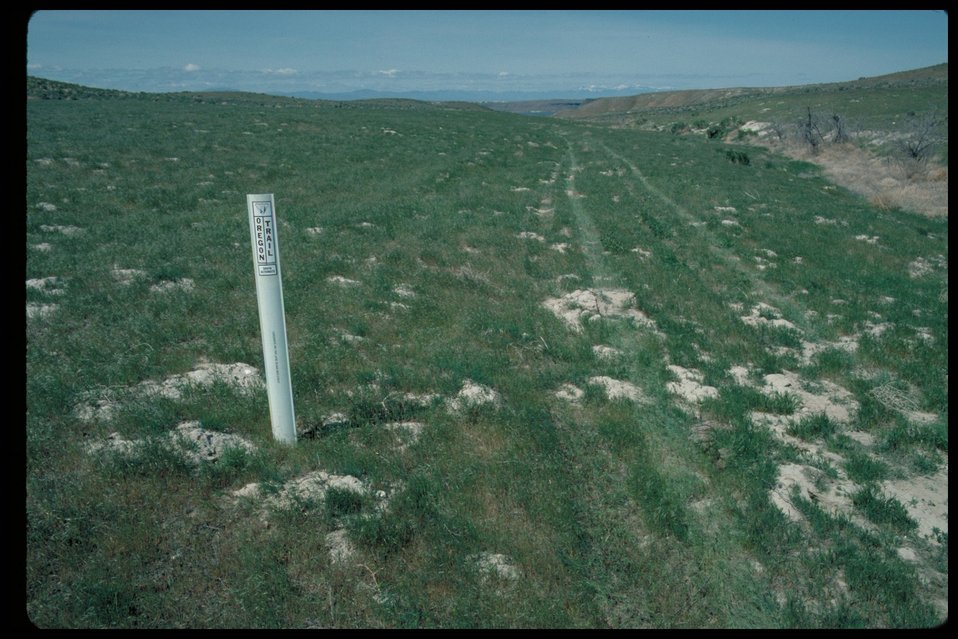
Oregon Trail North of Strike Reservoir Lower Snake River District